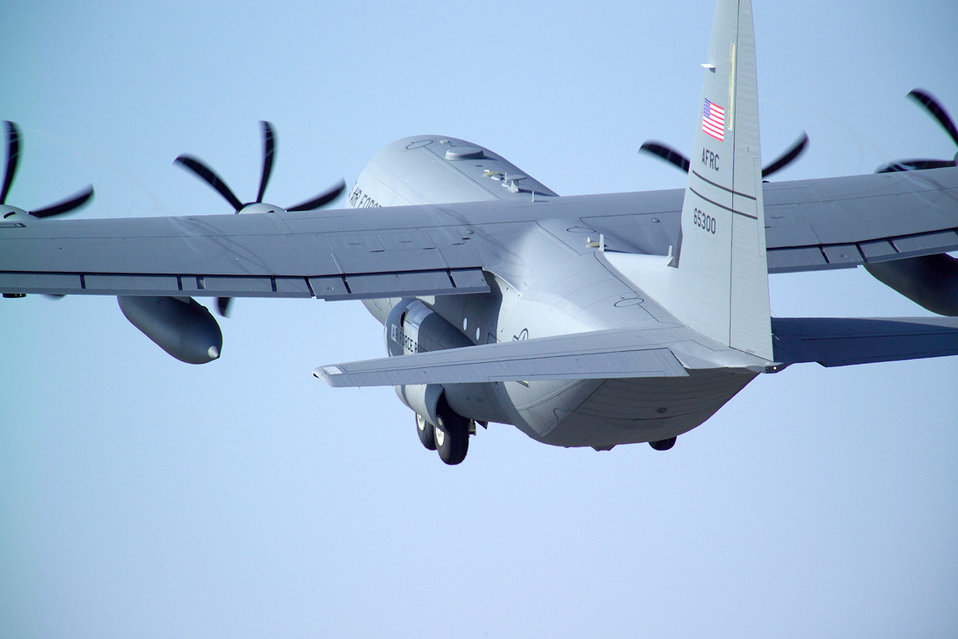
Hurricane Hunters track down Alberto

An Air Force Reserve Command WC-130J Hercules from the 403rd Wing at Keesler Air Force Base, Miss., takes off to hunt another hurricane. The 403rd is the only Department of Defense unit with the designated mission of flying into hurricanes to gather critical data for the National Weather Service.